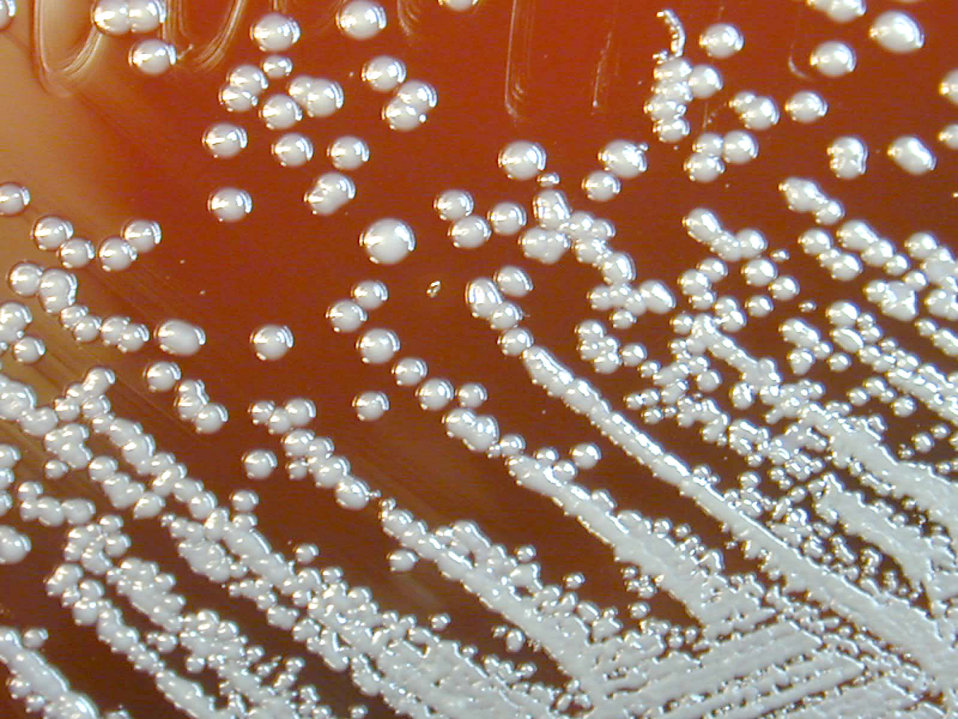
Burkholderia pseudomallei grown on sheep blood agar for 48 hours.